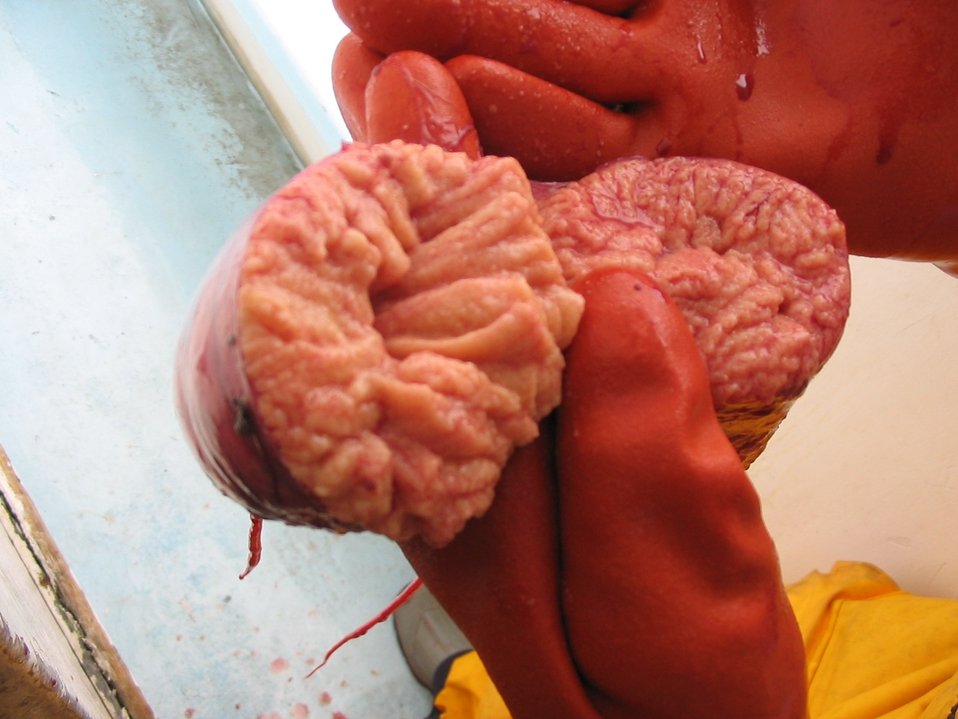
Tissue sample from large fish